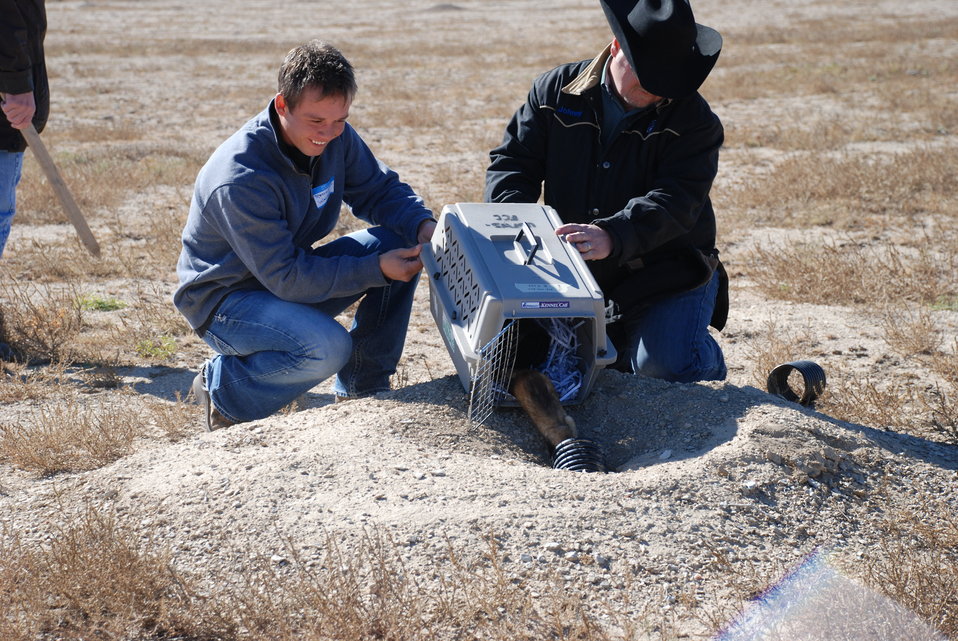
Black-footed Ferret Release

On Wednesday, October 30, 2013, thirty endangered black-footed ferrets were released onto cattle rancher Gary Walker's land, west of Pueblo, Colorado.

The release launched a potentially new way of preserving endangered species and was accomplished by way of a Safe Harbor Agreement (SHA). This SHA provides opportunities for private and Tribal landowners to volunteer their lands for reintroductions of this endangered species without affecting their land-use activities beyond mutually agreed-upon measures. It also extends these assurances to surrounding non-participating lands and other landowner interests. This SHA will be an important step in promoting the recovery of this iconic species.